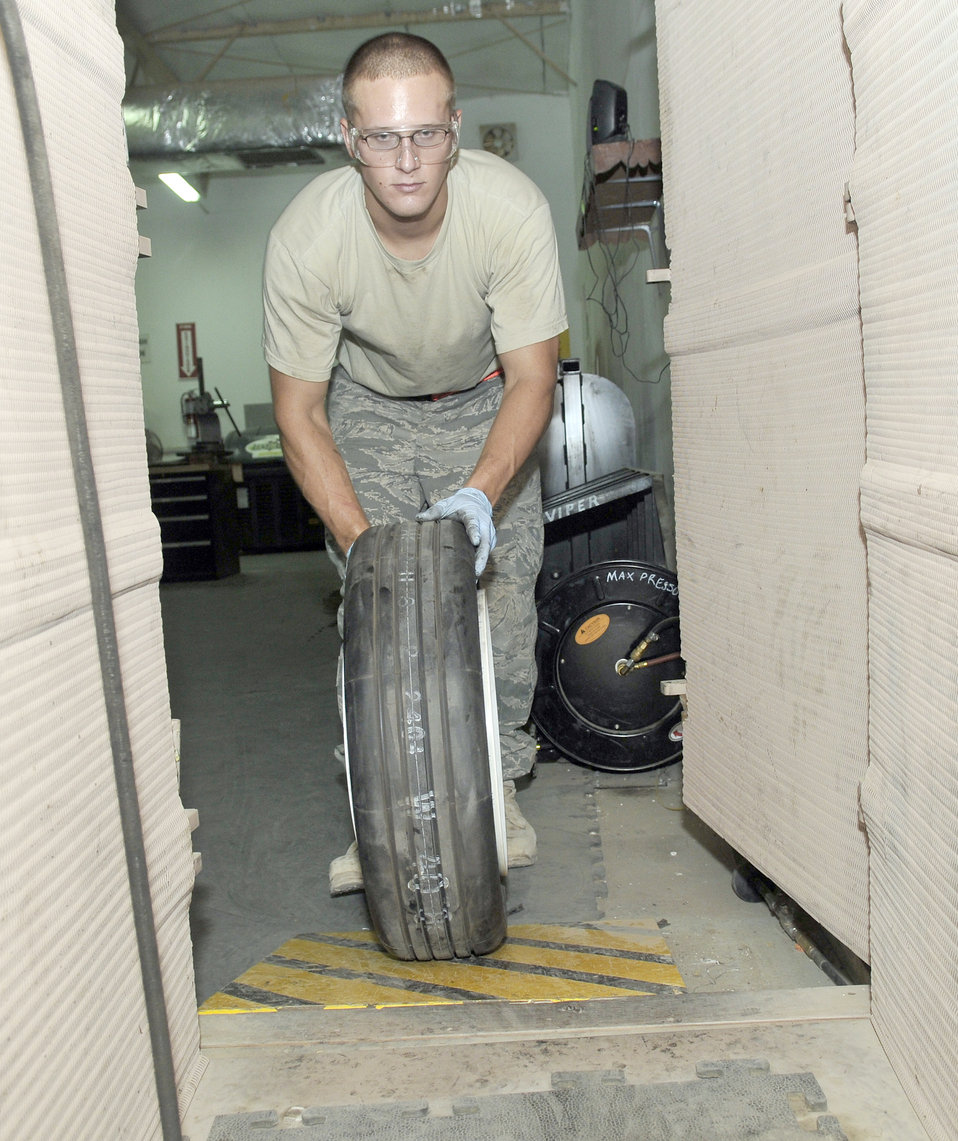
Crash recovery

Senior Airman William Davenport pushes a rebuilt aircraft wheel into a tire inflation closet to fill it with nitrogen July 9, 2010, at Joint Base Balad, Iraq. The closet is used to inflate wheels to prevent injury if the wheel explodes while under pressure. Airmen Davenport is a 332 Expeditionary Maintenance Squadron crash recovery, wheel and tire technician.